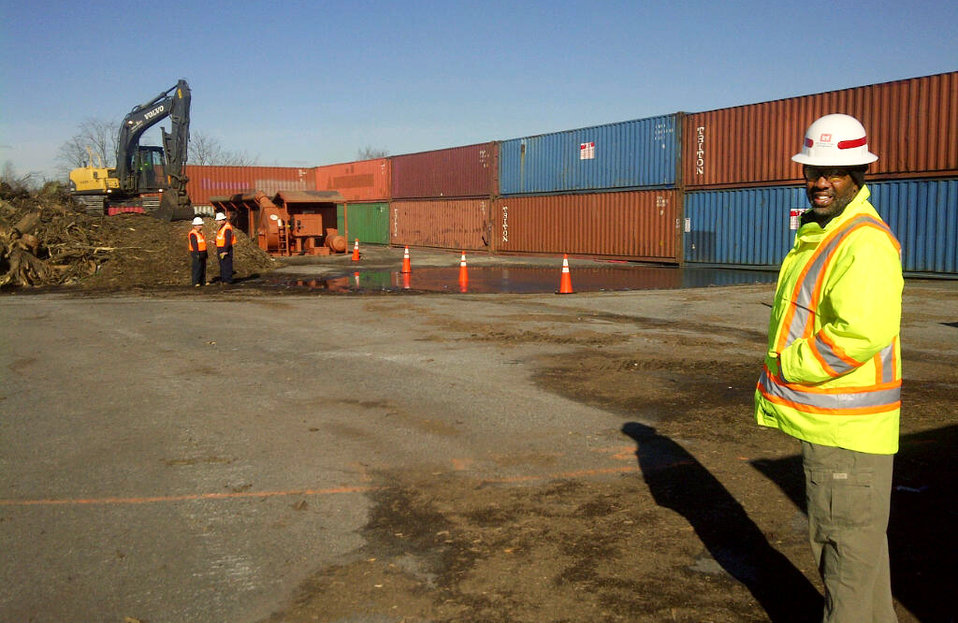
Curtis Morris guides Sandy-debris incineration

Curtis Morris, from the U.S. Army Corps of Engineers Sacramento District’s safety office, monitors safe operation of an air curtain incinerator Dec. 28, 2012, here at Floyd Bennett Field in Brooklyn, NY.
The majority of vegetative debris leftover from Hurricane Sandy is put to good use (mulch, etc.), but there is great concern about an Asian Longhorn Beetle infestation, requiring us to use eco-friendly incinerators to destroy the remaining debris before the beetle emerges.